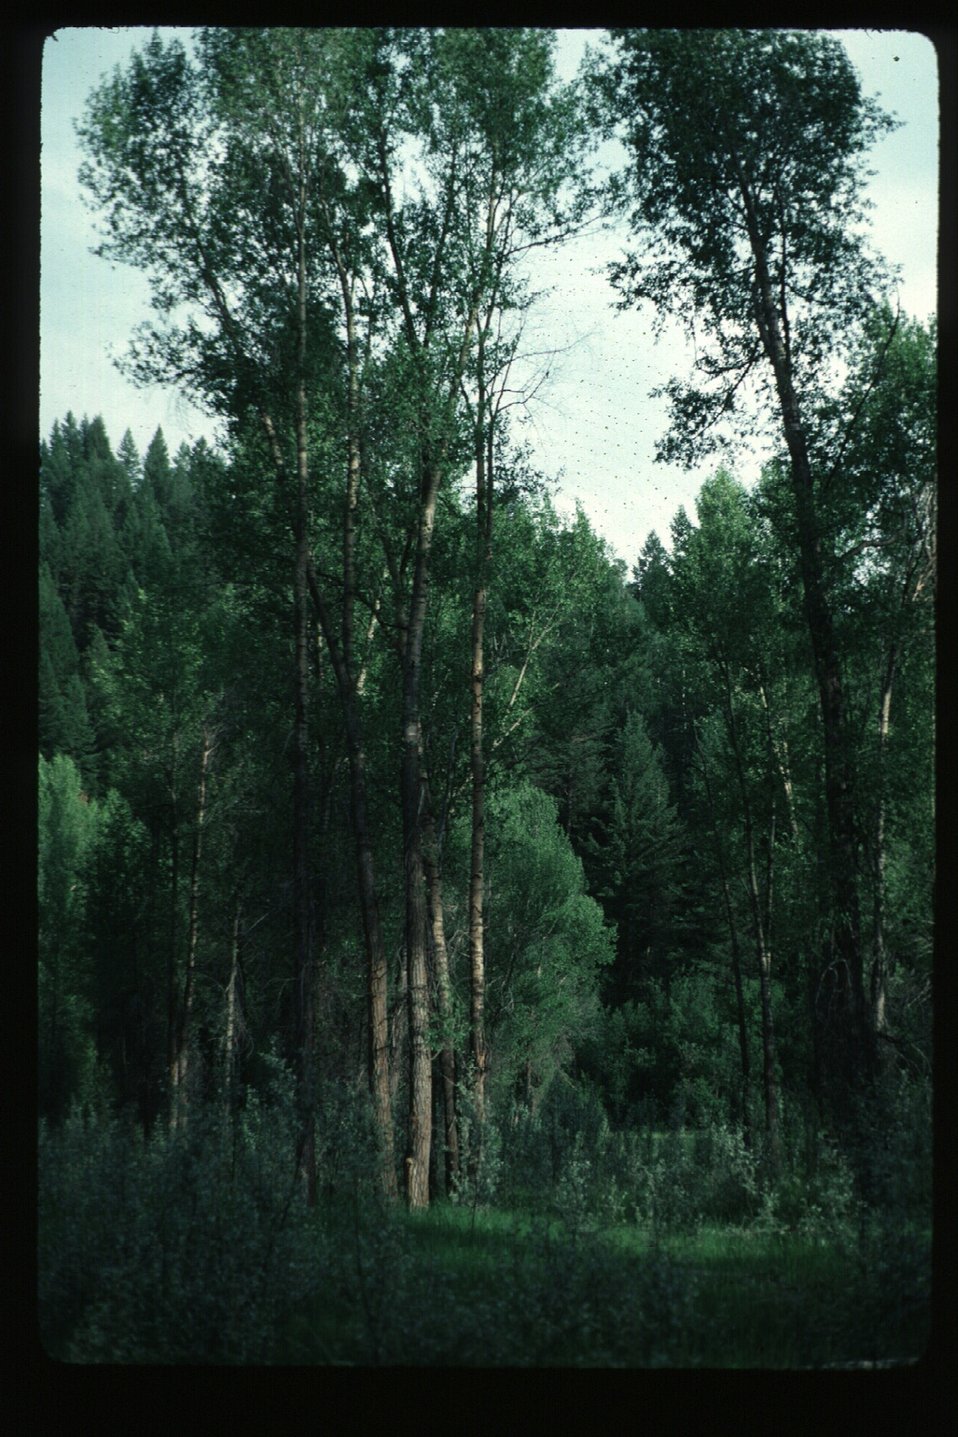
South Fork of Snake River Idaho Falls Field Office USRD Upper Snake River District